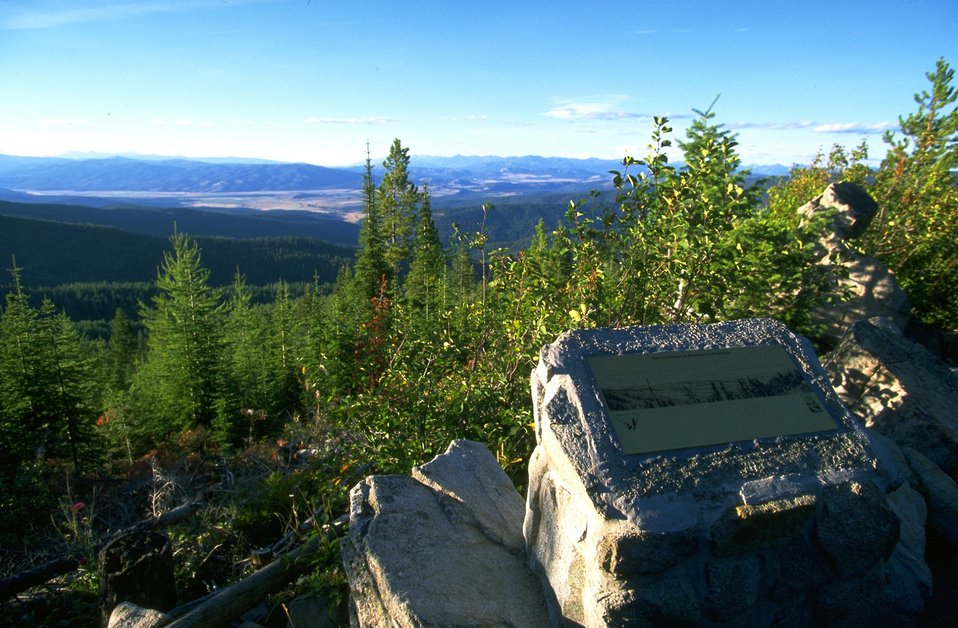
Garnet Back Country Byway--overlook interpretive sign